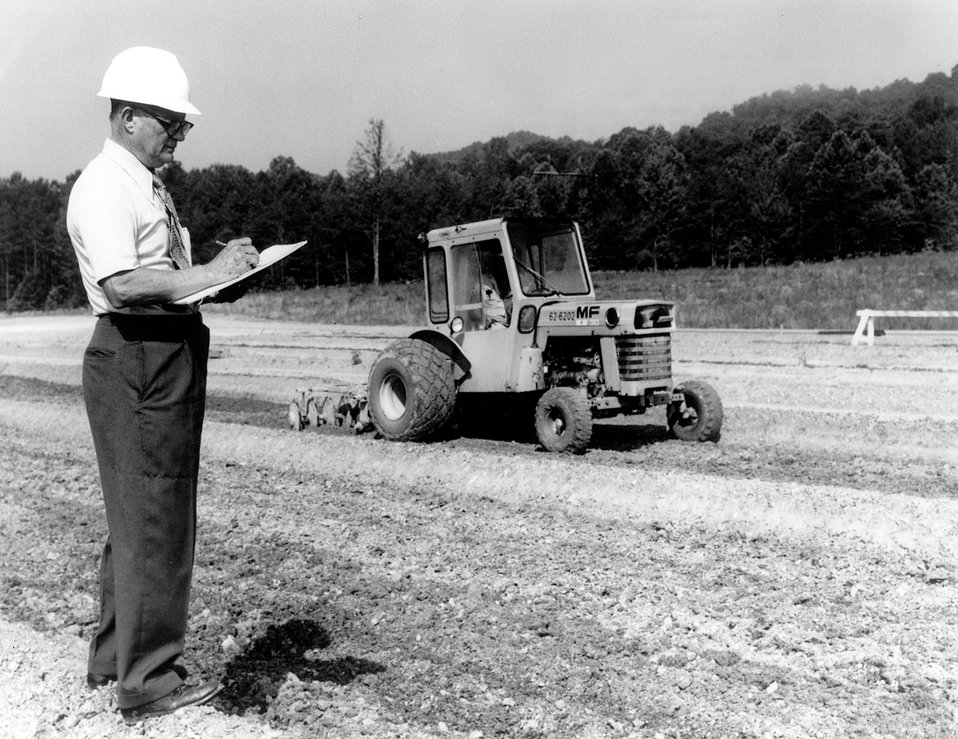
MICROBIAL ASSIMILATION...Experiments constructed at the U.S. Atomic Energy Commission's Oak Ridge Y-12 Plant indicate that oil and machine coolant wastes can be disposed of by feeding them to natural micro-organisms in the soil. Circa 1974.